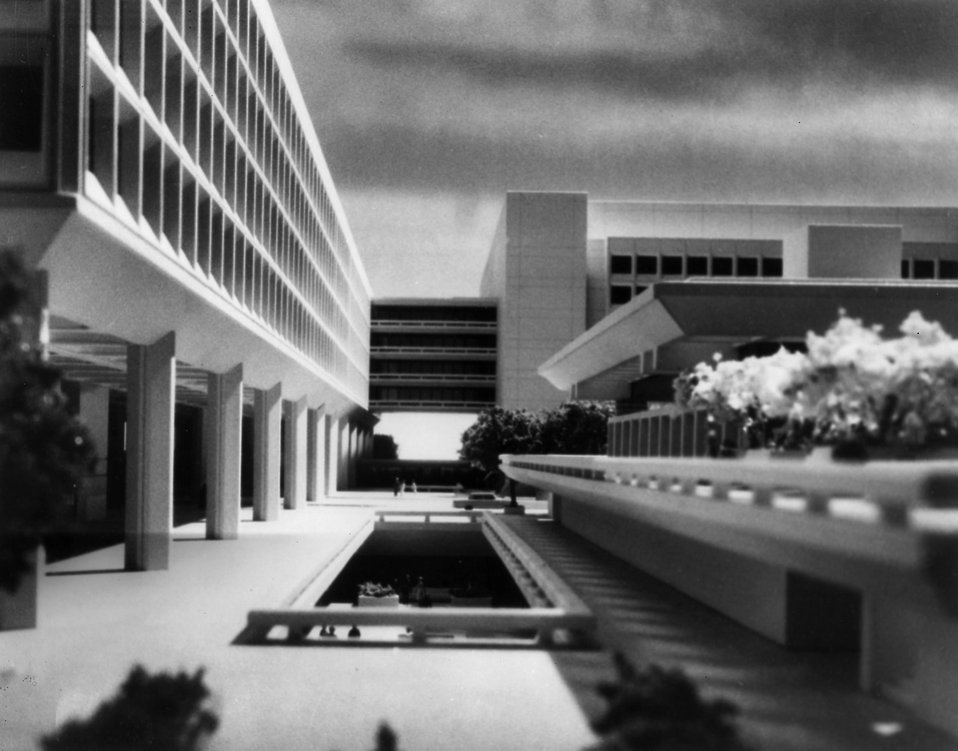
Federal Office building No. 5 Washington DC